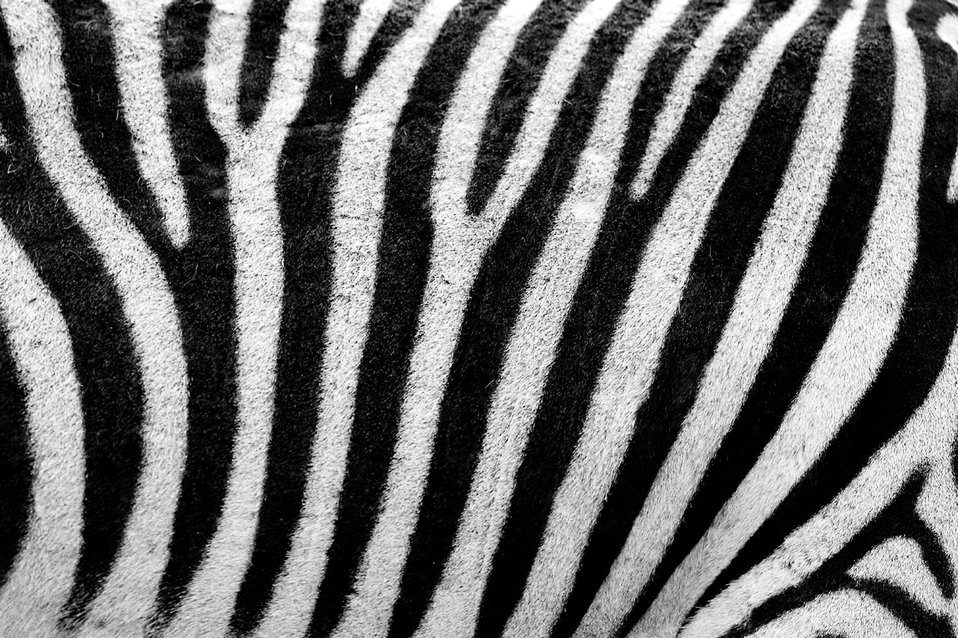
Zebra texture

Black and white stripes on zebra skin.